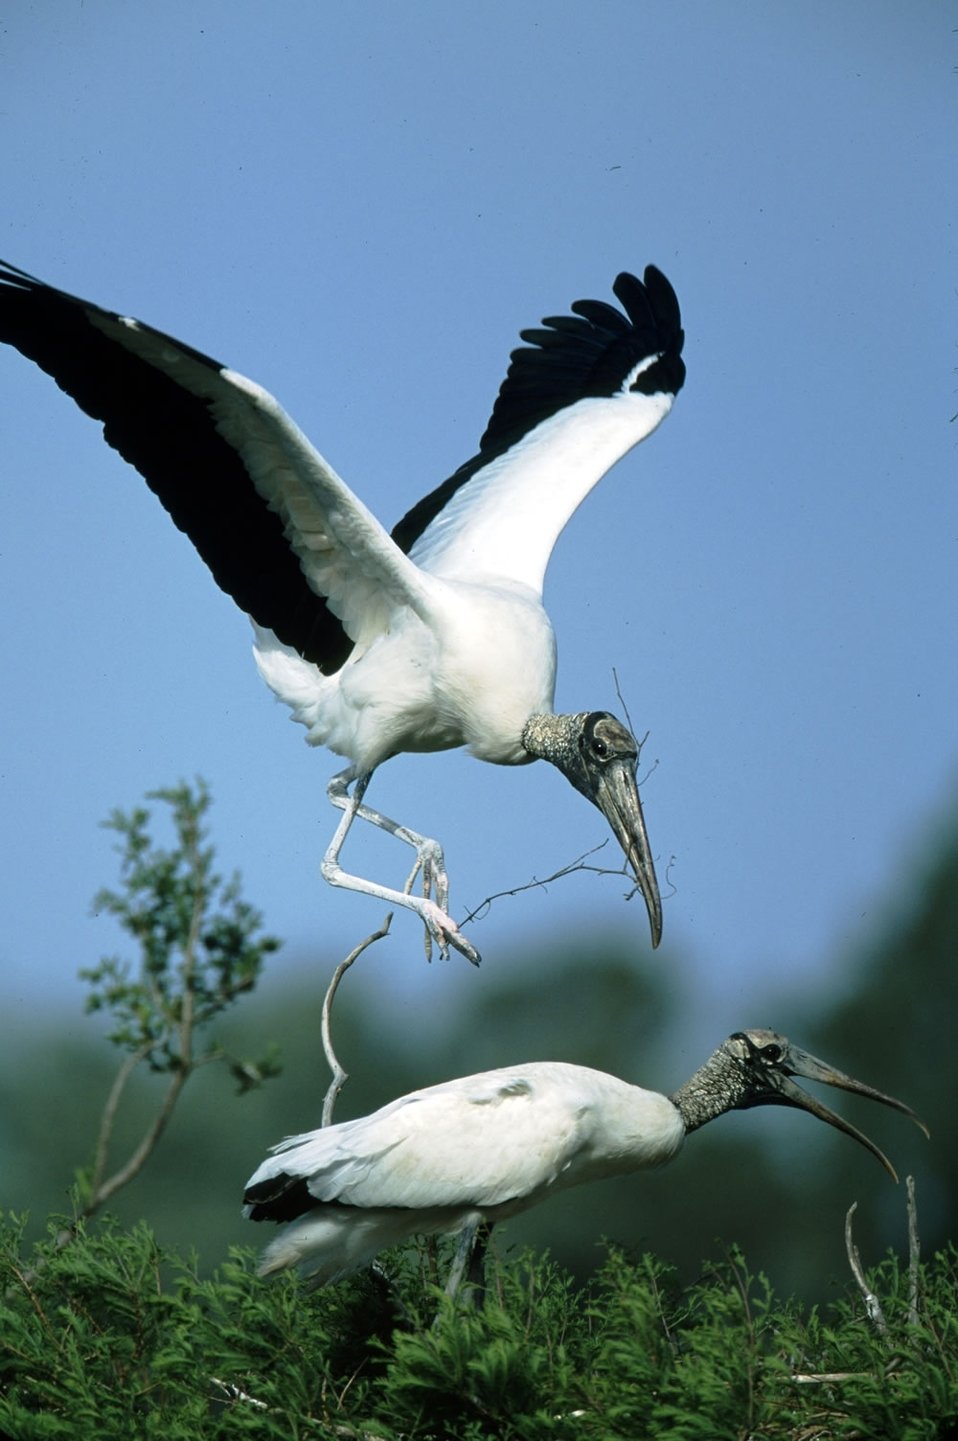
Pinckney Island NWR Wood Stork

An endangered wood stork comes in for a landing at Pinckney Island National Wildlife Refuge in South Carolina.